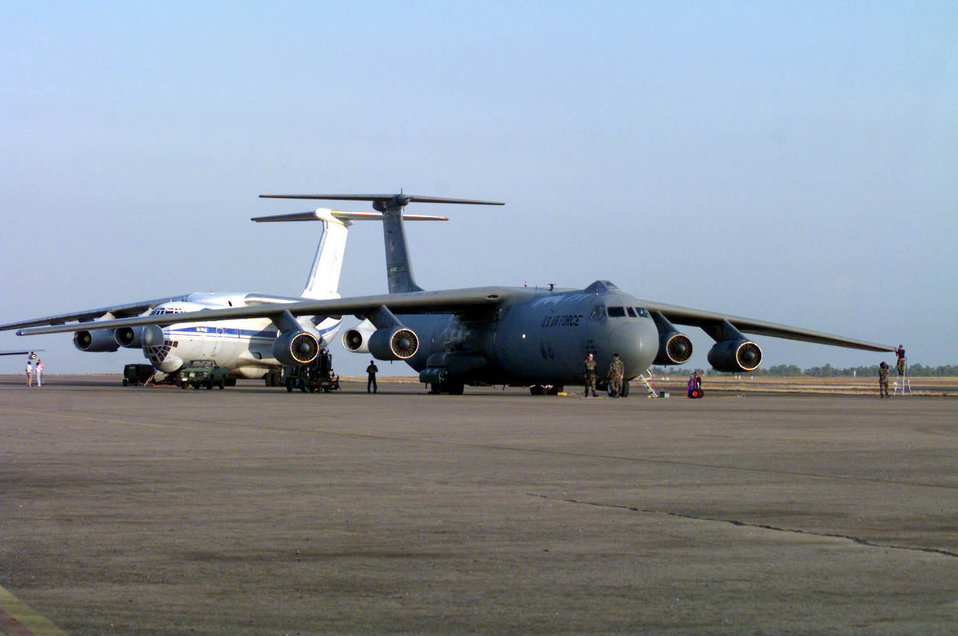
C-141 Starlifter

FILE PHOTO -- The C-141 Starlifter is the workhorse of the Air Mobility Command. The Starlifter fulfills the vast spectrum of airlift requirements through its ability to airlift combat forces over long distances, inject those forces and their equipment either by airland or airdrop, re-supply employed forces, and extract the sick and wounded from the hostile area to advanced medical facility.